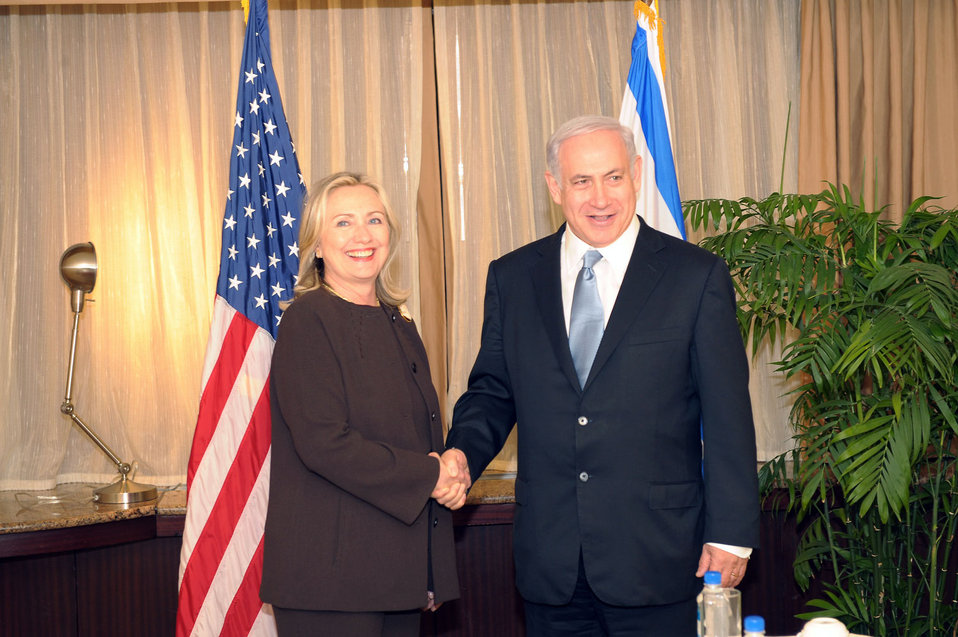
Secretary Clinton Meets With Israeli Prime Minister Netanyahu

U.S. Secretary of State Hillary Rodham Clinton meets with Israeli Prime Minister Benjamin Netanayahu at the Loews Regency in New York, New York, on September 21, 2011.